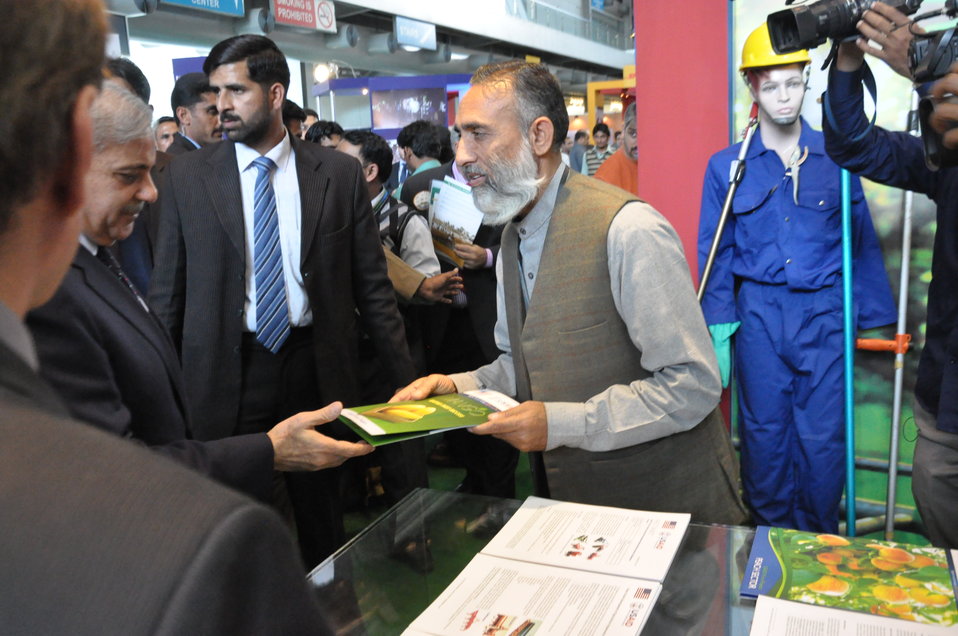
USAID Firms Project at the Dawn Agri Expo 2014

The Chief Miniter Punjab, Mr Shahbaaz Sharif at visiting the USAID Firms stall at the Dawn Agri Expo 2014 event in Lahore